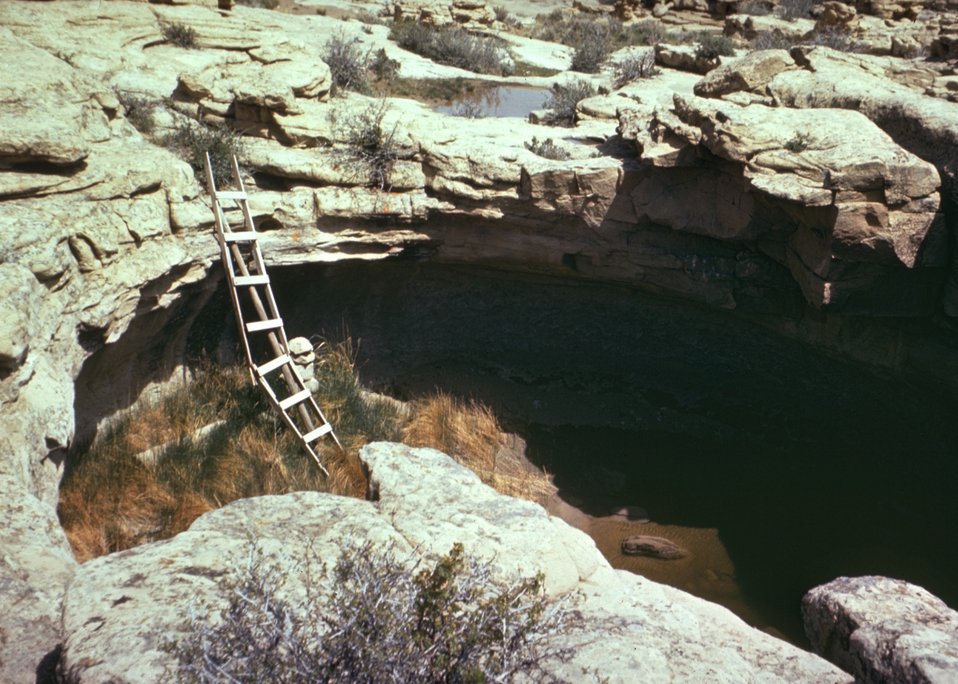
View of an unknown cave.